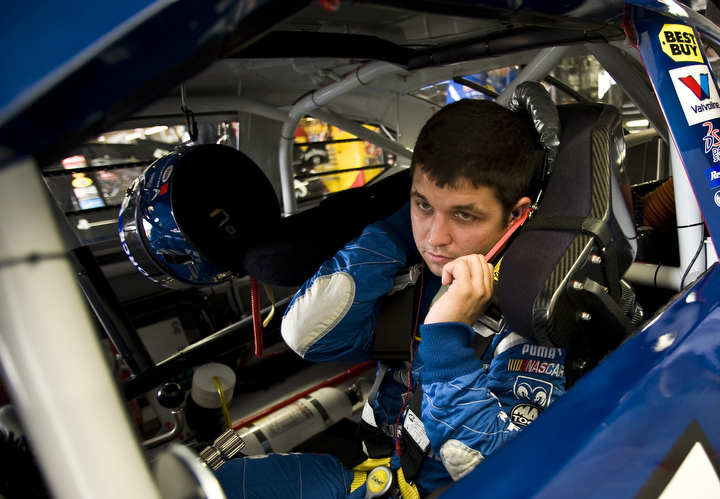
Coca-Cola 600

Reed Sorenson, NASCAR driver of the Richard Petty Motorsports #43 Air Force Dodge Charger, straps into his race car before practice trails May 23 in preparation for the Lowe's Motor Speedway Coca-Cola 600 Sprint Cup race, Charlotte, N.C.